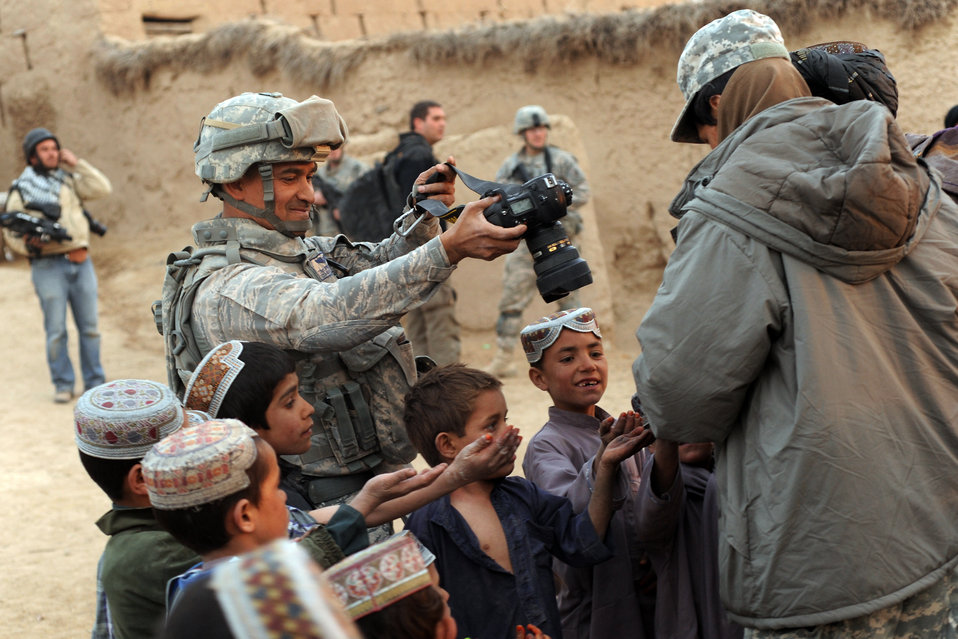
Behind the lens: Combat camera in Afghanistan

Tech. Sgt. Efren Lopez takes a picture of Afghan nationals Nov. 30, 2009, in the village of Shabila Kalan, Zabul province, Afghanistan. Sergeant Lopez is a photographer with 4th Combat Camera Squadron, March Air Reserve Base, Calif.